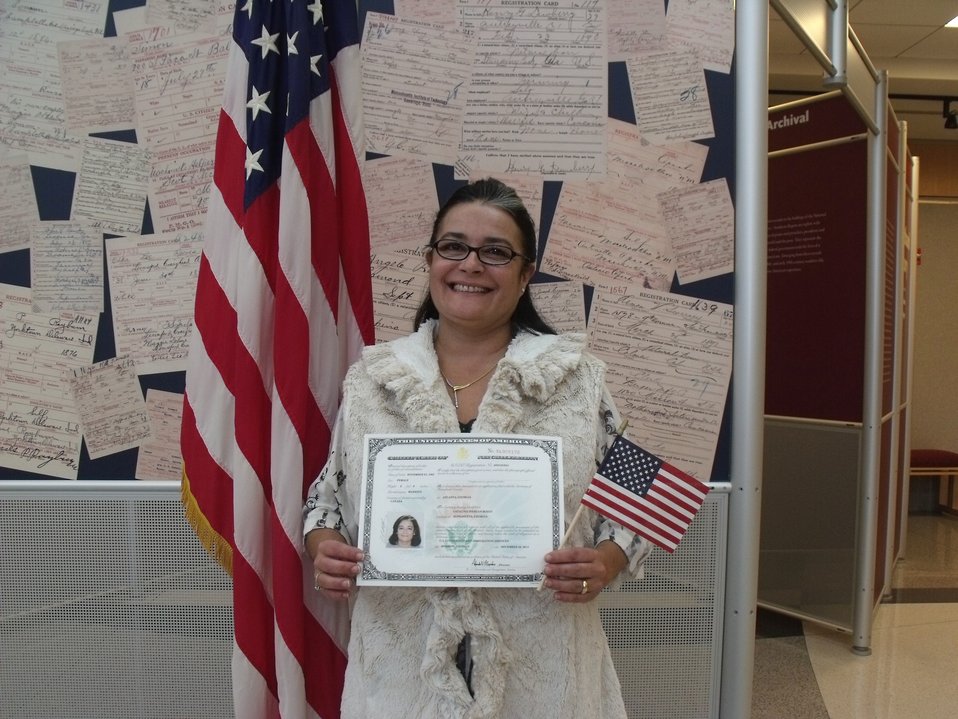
New Citizens